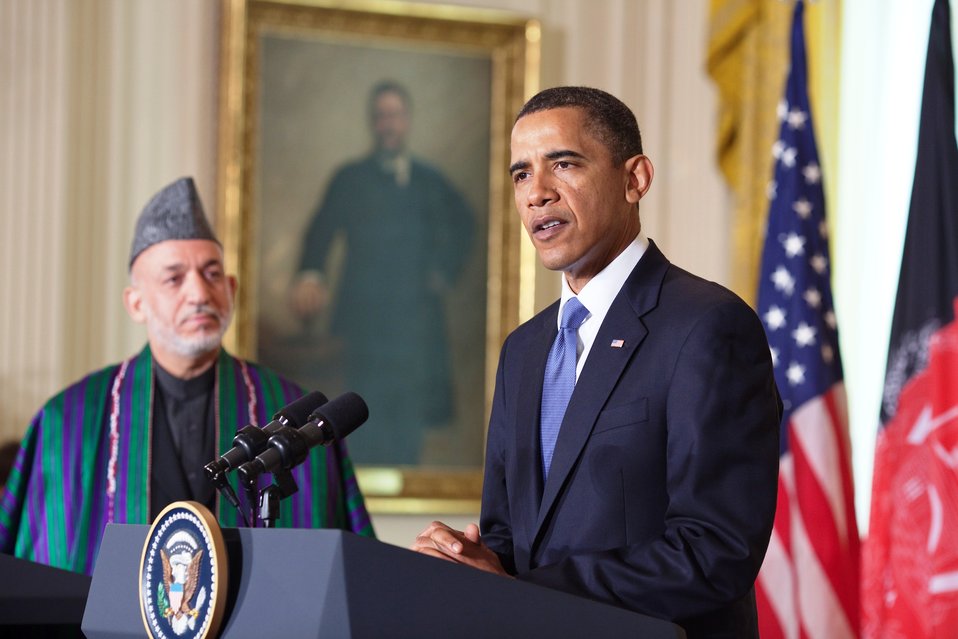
President Obama and Afghan President Karzai Deliver Remarks

President Barack Obama and President Hamid Karzai of Afghanistan deliver remarks at the White House in Washington, D.C., on May 12, 2010.